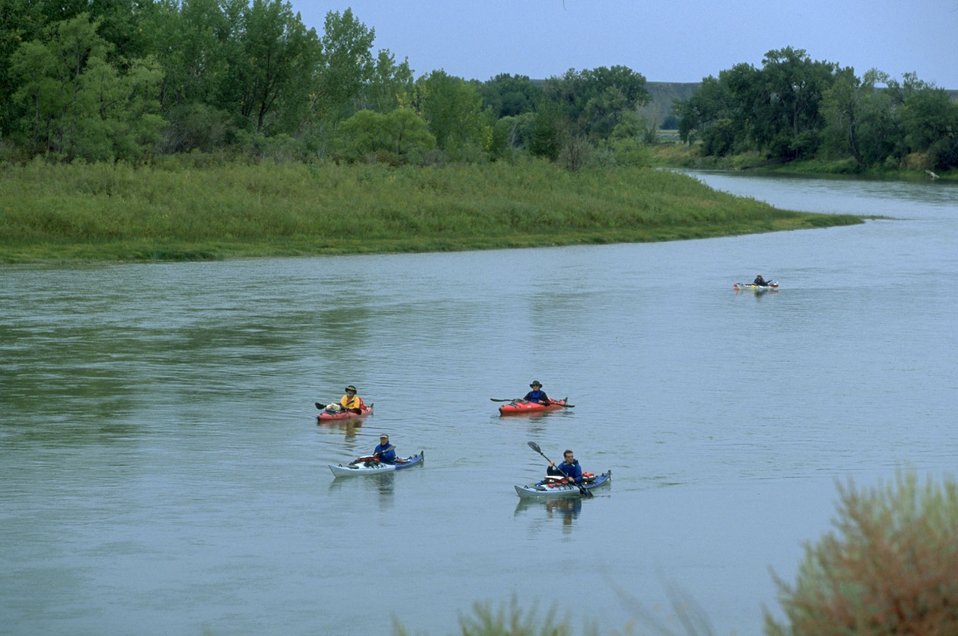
Floaters on Missouri River